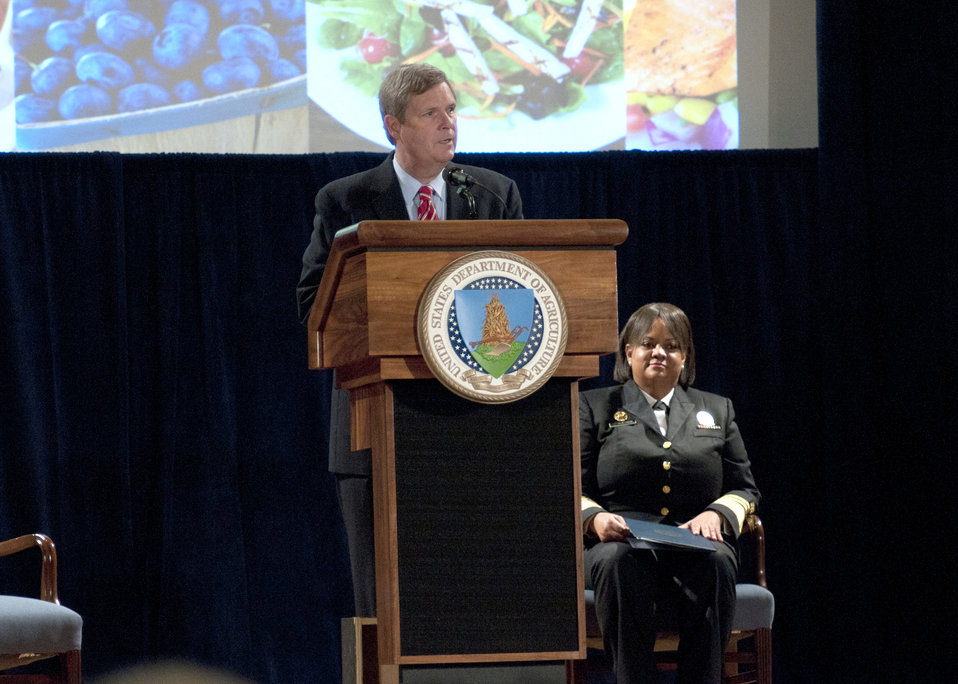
Agriculture Secretary Tom Vilsack introduces the new Food Icon MyPlate (seated Surgeon General Regina Benjamin) on Thursday, Jun. 2, 2011in the Jefferson Auditorium, U. S. Department of Agriculture (USDA). This new icon will replace the USDA’s MyPyramid image as the government’s primary food group symbol. MyPlate is an easy-to-understand visual cue to help consumers adopt healthy eating habits that are consistent with the 2010 Dietary Guidelines for Americans. MyPyramid will remain available to interested health professionals and nutrition educators in a special section of the new website.